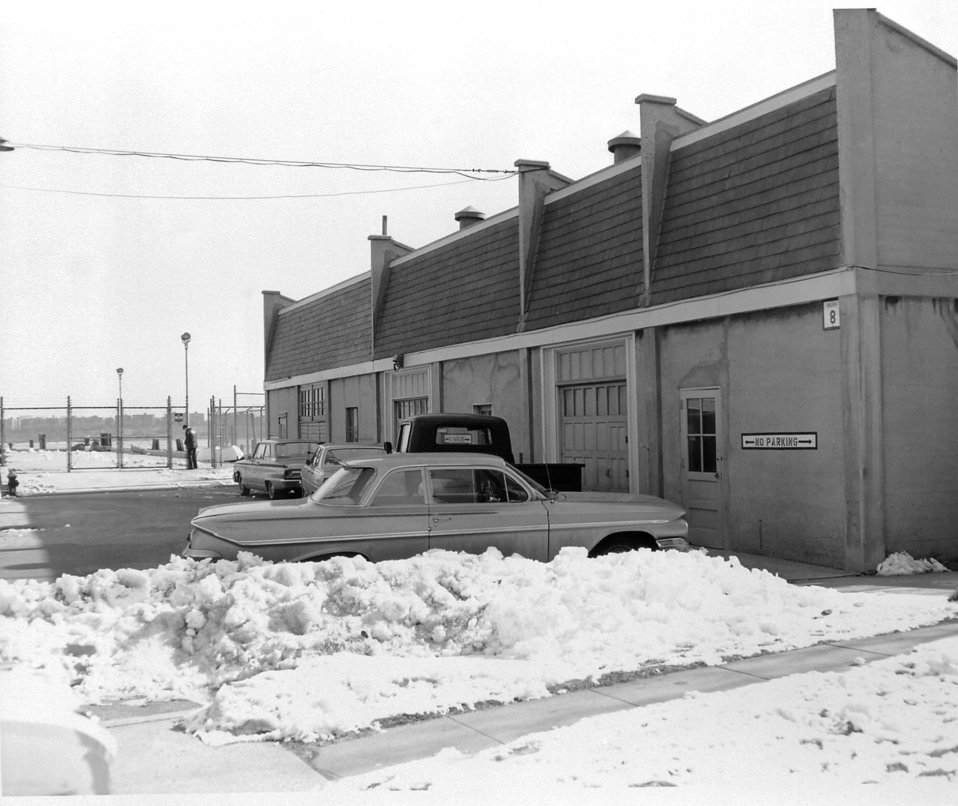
Buildings at the Rosebank Quarantine Station, 1967.